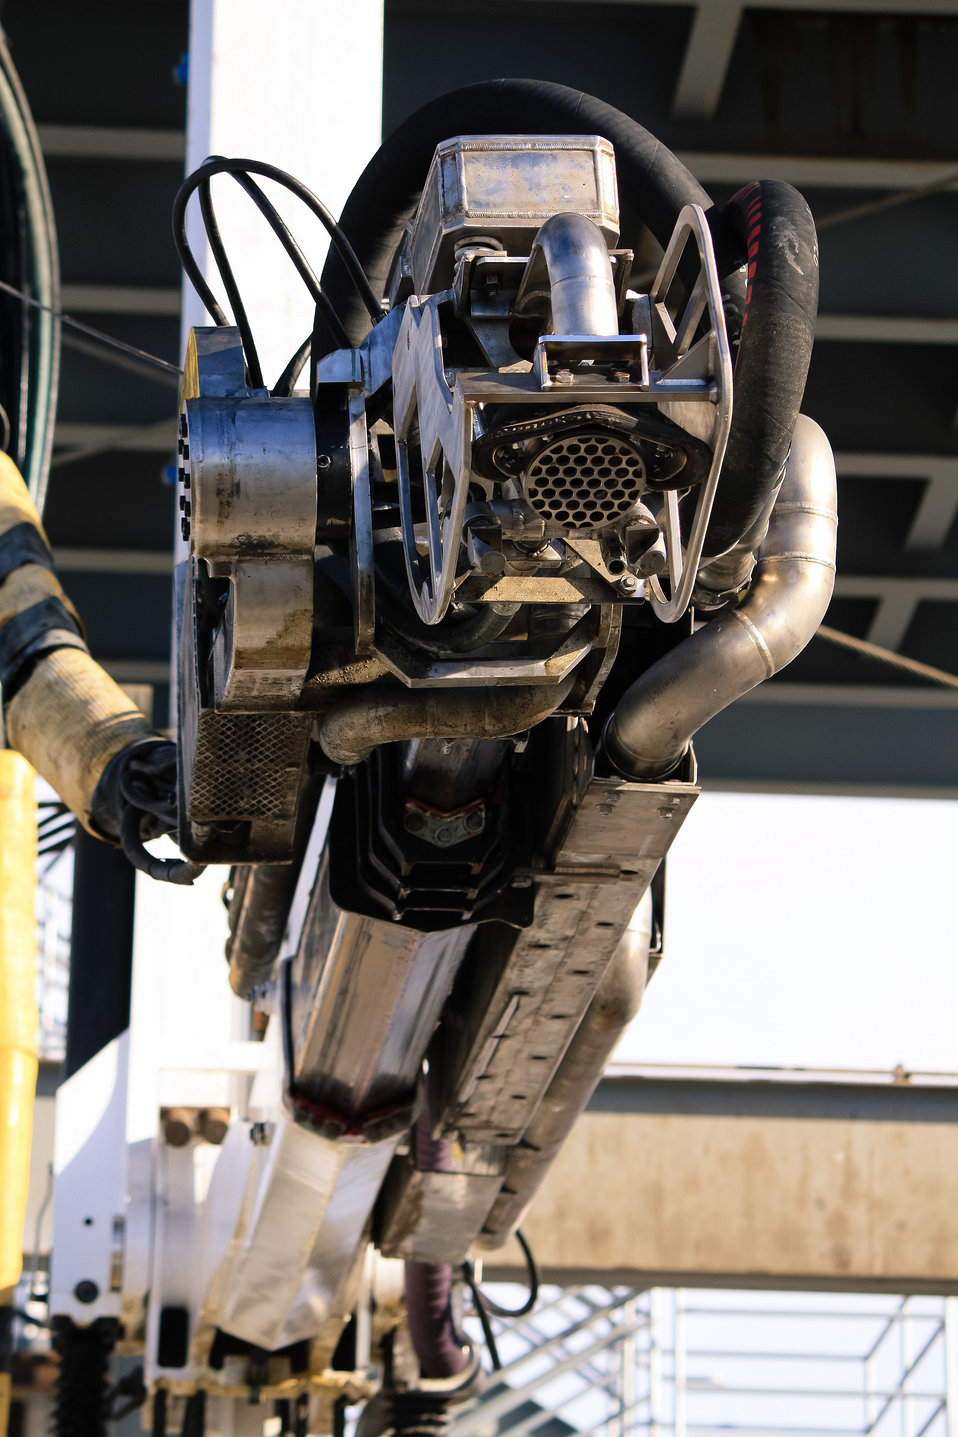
This retrieval tool is vacuum version of the Mobile Arm Retrieval System that was developed to extend inside the tank to reach waste at all parts of the tank more effective retrieval while using less liquid.

This MARS-V is intended for deployment in C-105, a tank that has possibly leaked since it was placed in service in the 1940s making it a good candidate for this 'dry' retrieval method.